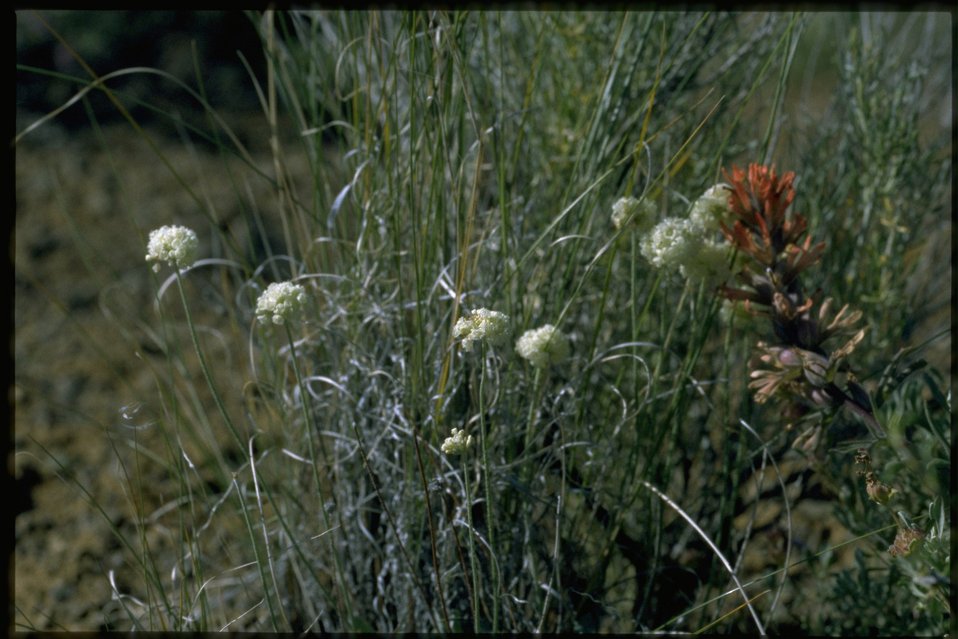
Farshot of Eriogonum.